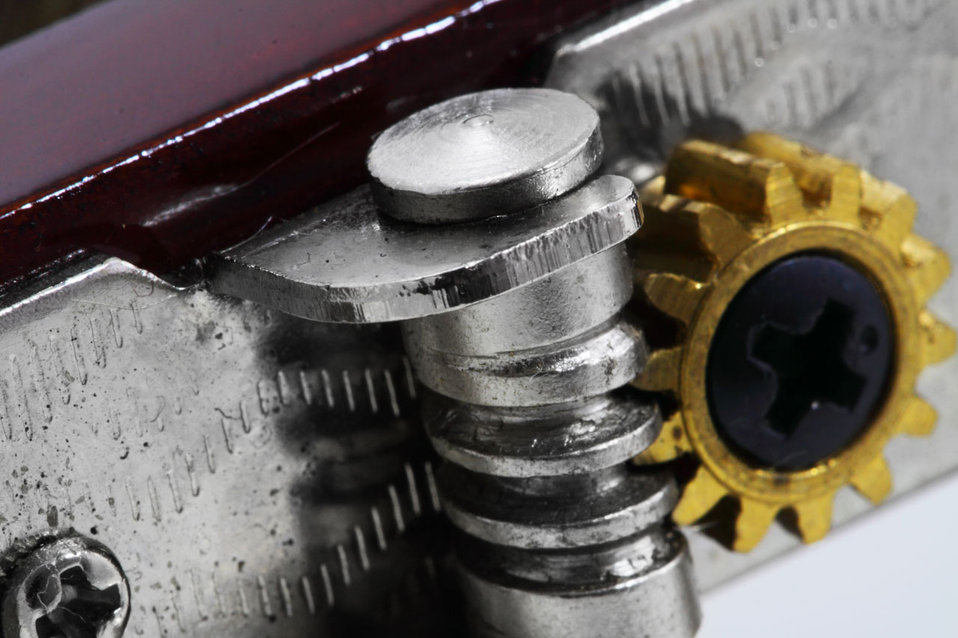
Guitar headstock

Close up on guitar headstock.